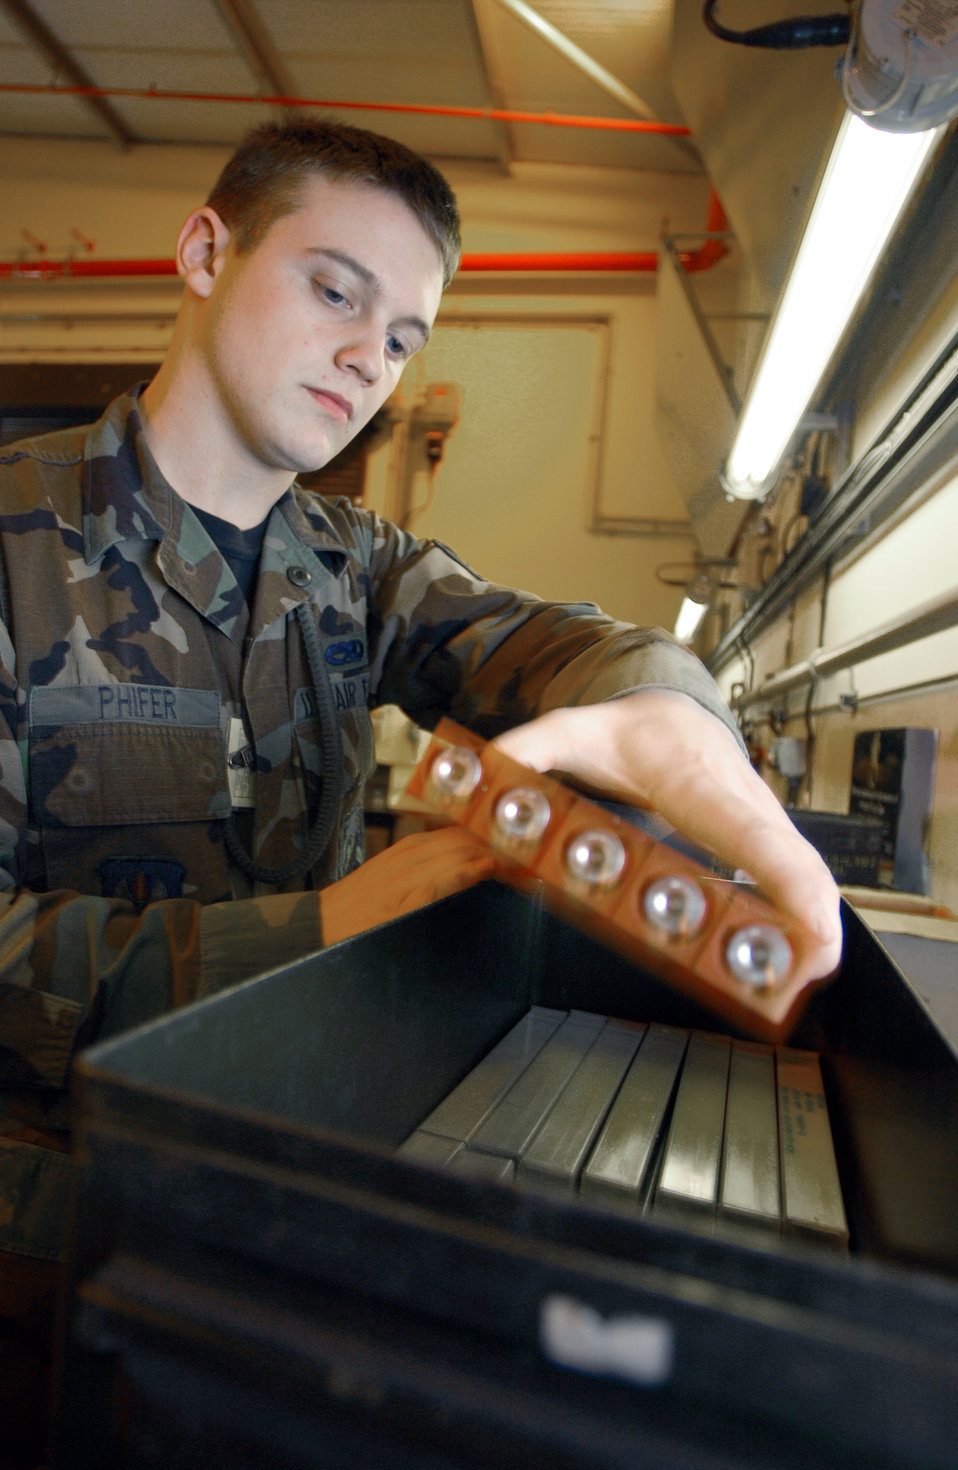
Chaff

ROYAL AIR FORCE LAKENHEATH, England -- Airman 1st Class Chris Phifer finishes building chaff. Chaff is made from strands of plastic coated in aluminum, and is used as a countermeasure from radar-guided missiles. Airman Phifer is a conventional maintenance crewmember with the 48th Munitions Squadron here.